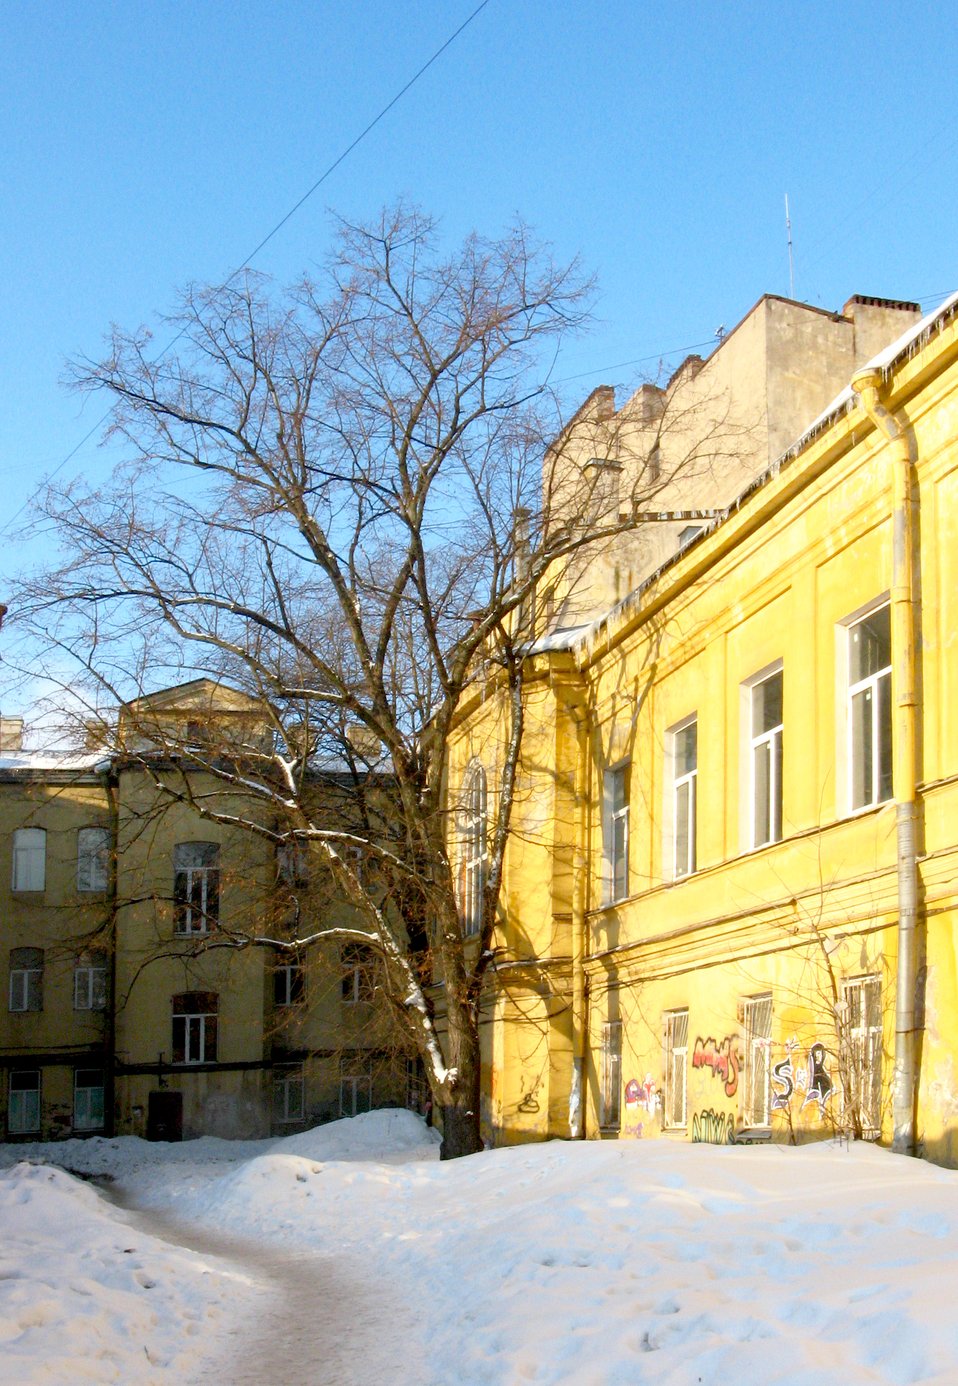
Русский: Зимнее дерево в жёлто-синем дворе. Справа часть д. 31, слева 29, 14-линия, В.О., Санкт-Петербург, Россия. Winter tree at yellow-blue yard. Building number 31 (right) and 29 (left), 14-line, Vasilievsky Island, Saint-Petersburg, Russia.